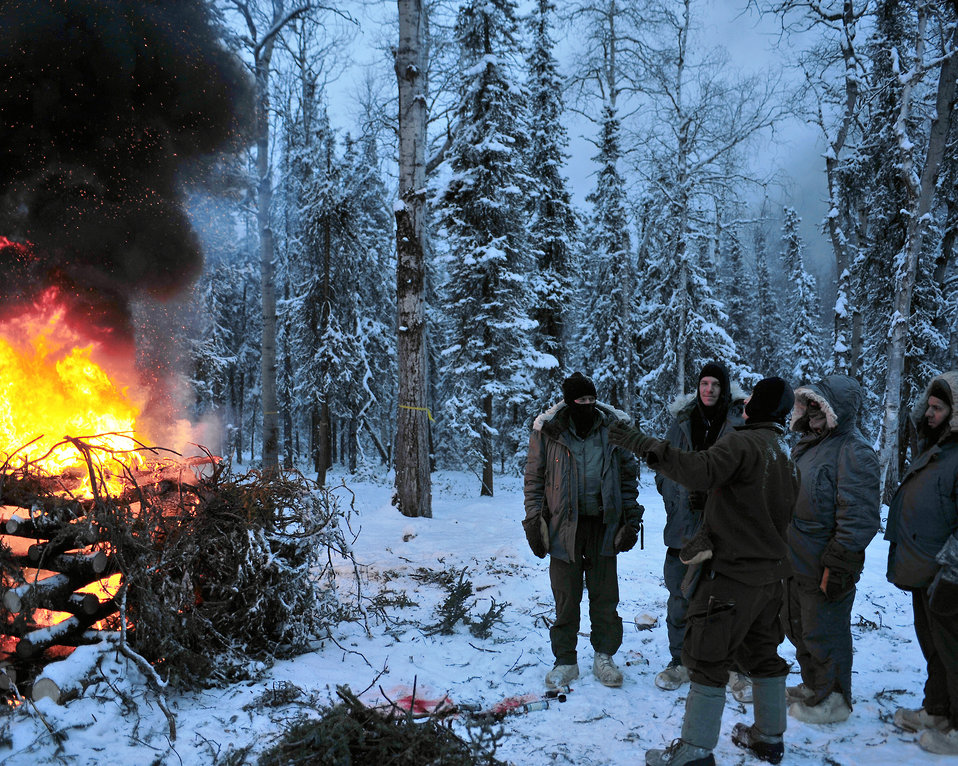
Learning survival skills in 'Cool School'

Senior Airman Chris Walsh explains the uses of signal fires Jan. 30 at Eielson Air Force Base, Alaska. Signal fires are one method of signal and recovery and one of the basic survival needs. Airman Walsh is an Arctic Survival School instructor.